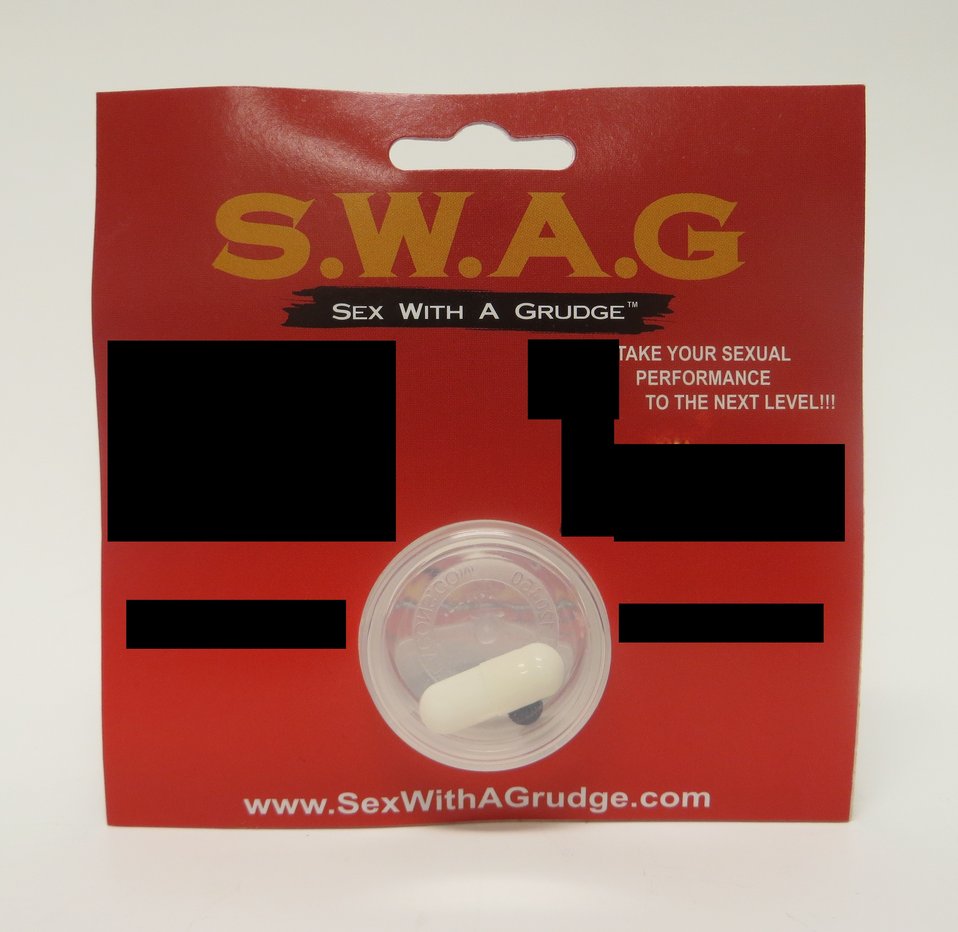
SWAG

April 16, 2014 - The FDA is advising consumers not to purchase or use S.W.A.G, a product promoted and sold for sexual enhancement. The product was found to contain undeclared sildenafil. For more information, go to www.fda.gov/Drugs/ResourcesForYou/Consumers/BuyingUsingMe...
And read this Consumer Update: Beware of Fraudulent ‘Dietary Supplements’